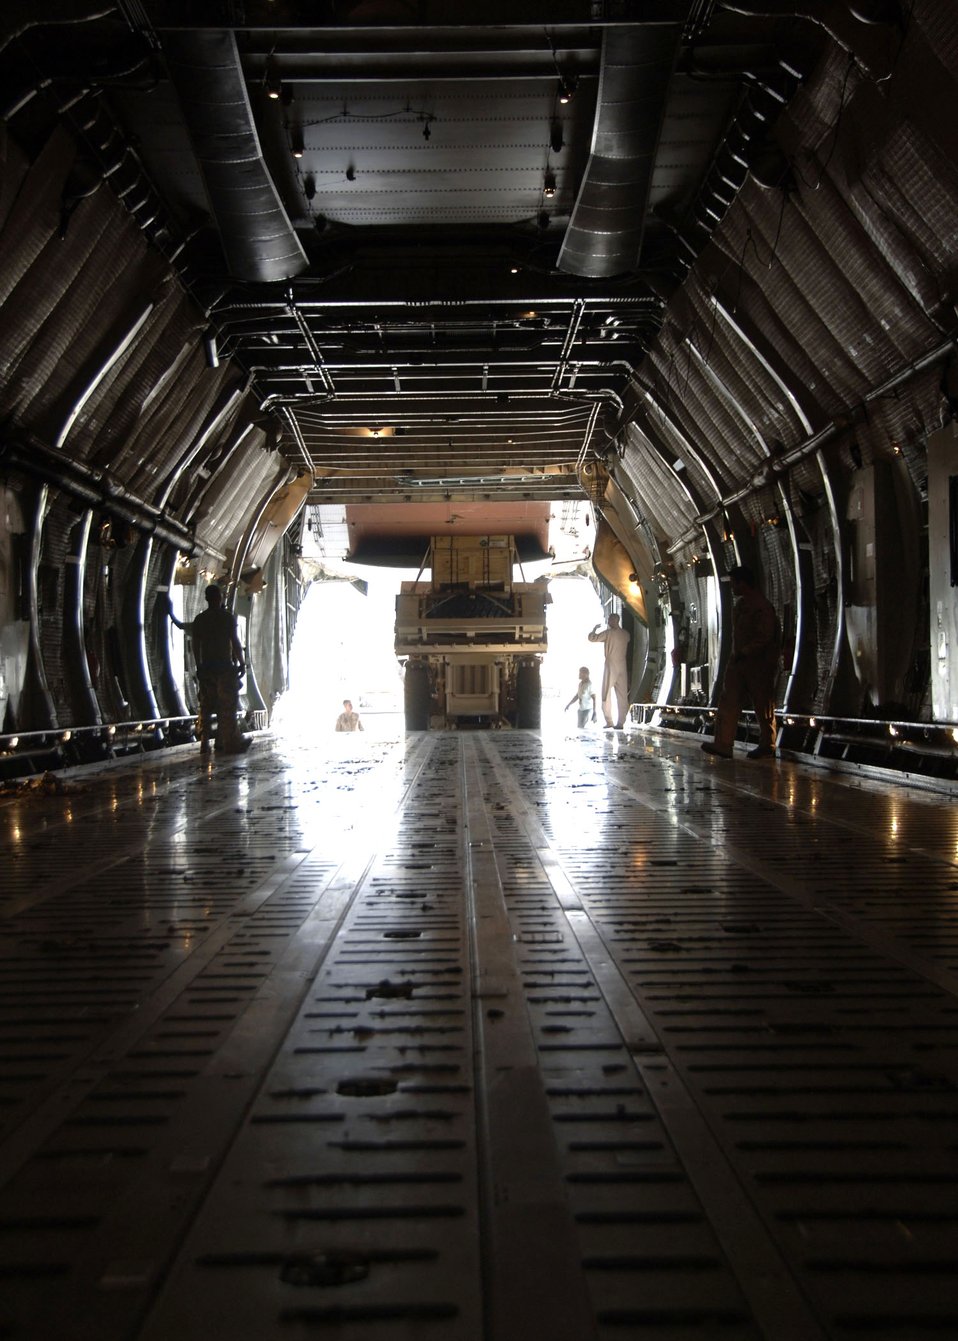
Charleston Airmen begin transporting new Army vehicles

An Army High Mobility Engineer Excavator is loaded onto a C-5 Galaxy Sept. 29 at Charleston Air Force Base, S.C. Airmen helped transport the vehicles to forward deployed Soldiers and contractors in hostile environments. The HMEE is a newly developed military construction vehicle capable of a wide range of mobility affording more protection for the operator than conventional excavators.